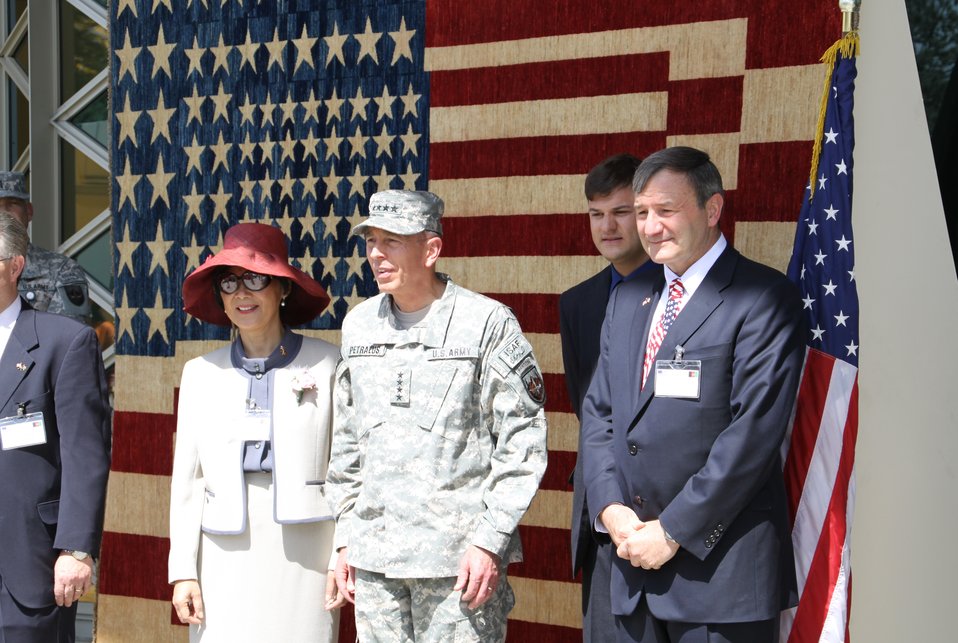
Kabul Official July 4th Celebration